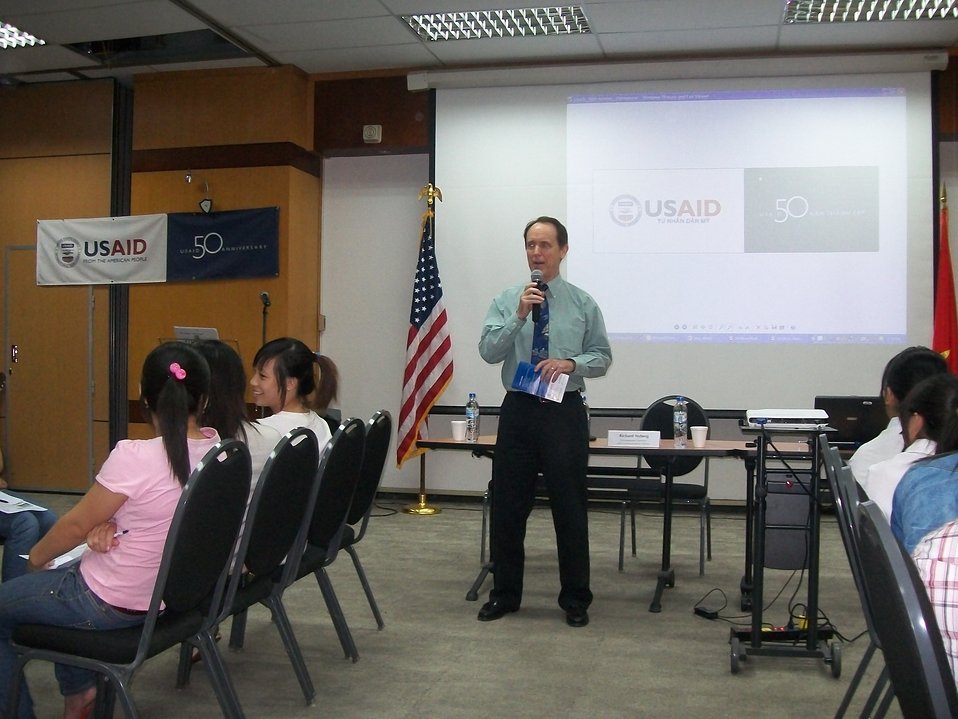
American Center and USAID host Debate Club on Higher Education

USAID/Vietnam Mission Director Francis Donovan address students and discusses the USAID-supported Higher Engineering Education Alliance Program with Arizona State University, Intel, and others.